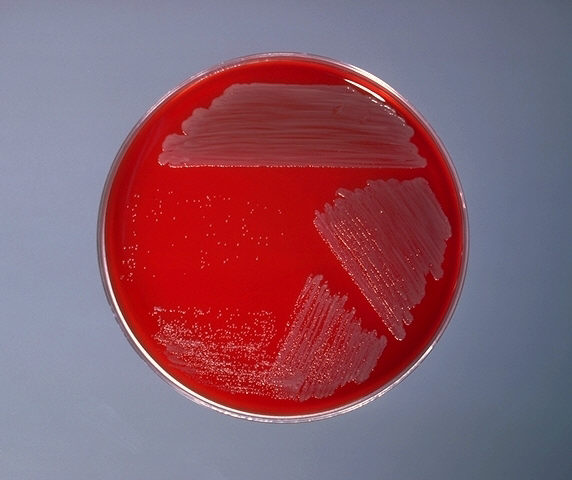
Blood agar plate culture of Corynebacterium striatum.